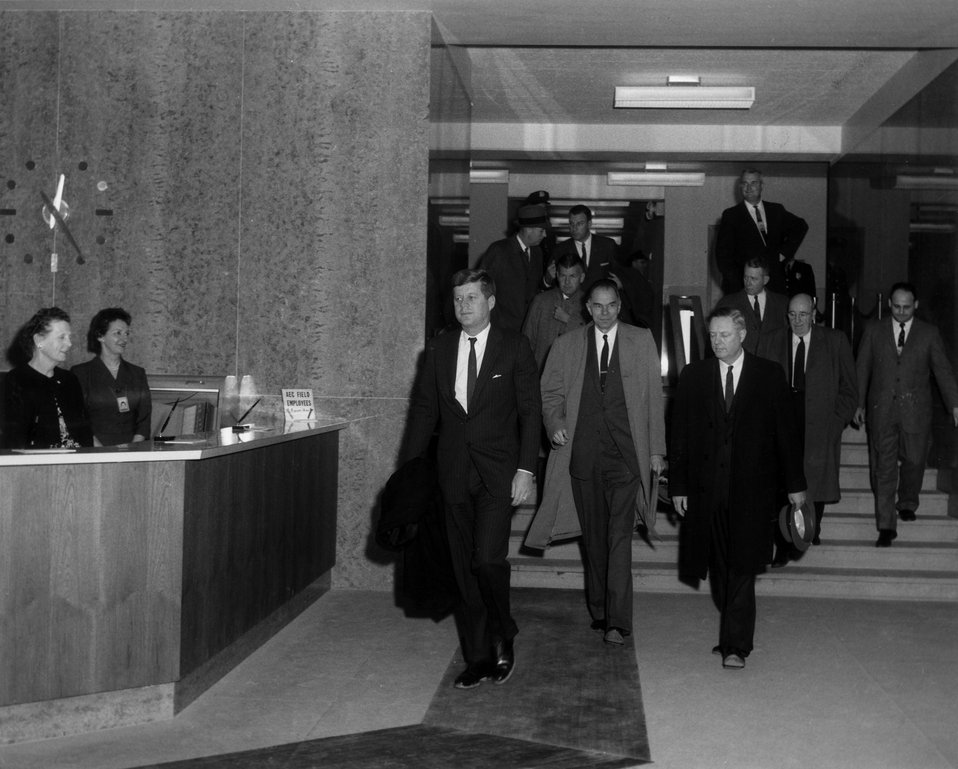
President Kennedy walks through the North Lobby as he exits the Atomic Energy Commission headquarters in Germantown. Behind the President are Chairman Glenn T. Seaborg (center), Commissioner Loren K. Olsen, Commissioner Robert E. Wilson (extreme right), and Commission General Manager Alvin R. Luedecke. c. undated